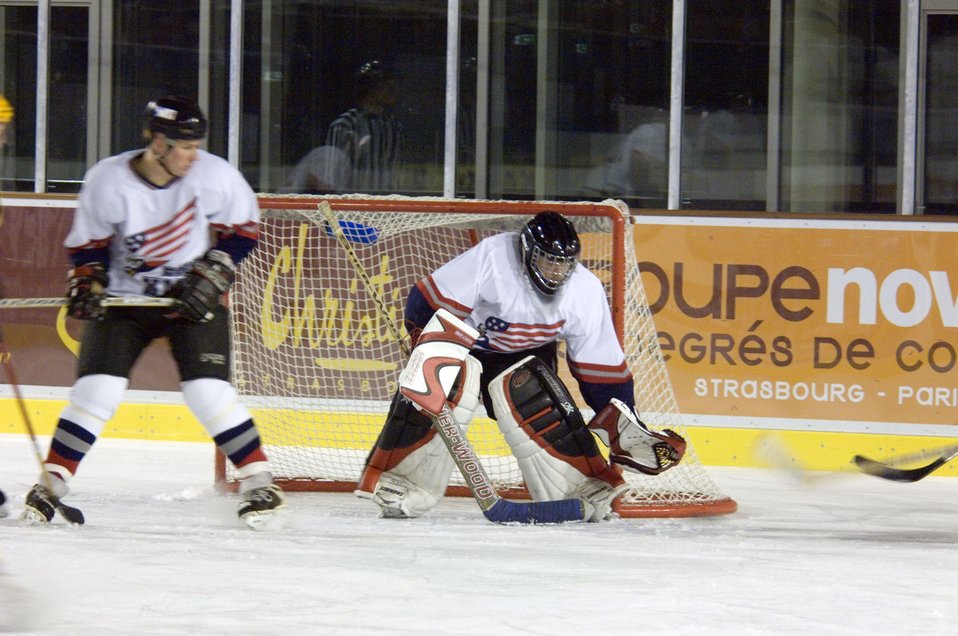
German-based Airmen put French on ice

STRASBURG, France (AFPN) -- Staff Sgt. Adam Woolley captures a puck during a hockey game in eastern France. The Ramstein Rams hockey team held on to win 6-5 against the Strasburg Gryphons despite a late game push. Sergeant Woolley is part of the Kaiserslautern Military Community, which has a hockey team made up of 30 players in different skill levels varying from semi-pro to beginners. Sergeant Woolley is with the USAFE's regional supply squadron at Sembach Air Base, Germany.